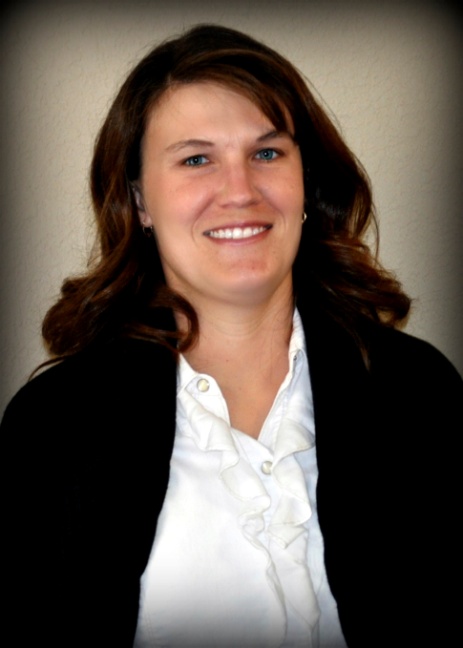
Lisa Borel, Alligator River NWR Refuge Firefighter, served in the U.S. Air Force from 1995 to 2002.